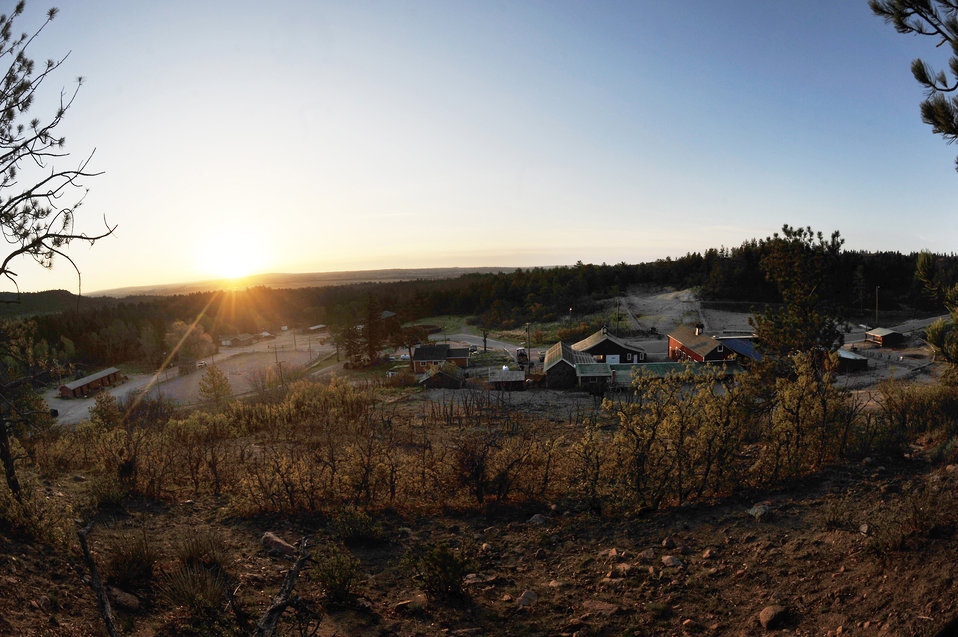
Warrior Wellness Program

The sun rises April 29, 2012, at the equestrian center at the U.S. Air Force Academy in Colorado Springs, Colo. Service members taking part in the equine therapy here said that volunteering at the stables and working with horses helps them find inner peace and comfort after being deployed in Iraq and Afghanistan.